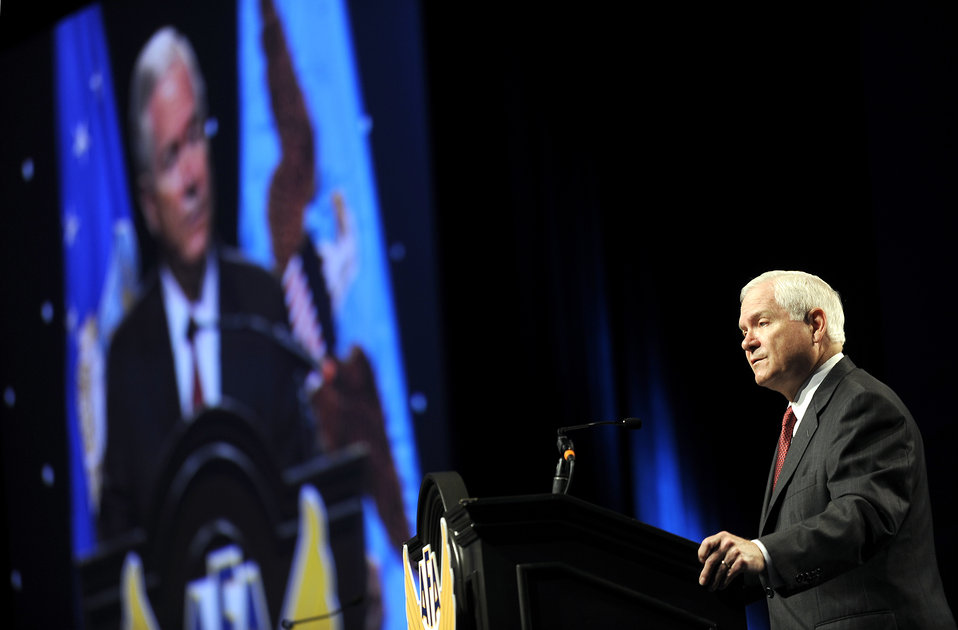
SecDEF announces return of KC-X program

Secretary of Defense Robert M. Gates addresses the audience at the Air Force Association's 2009 Air and Space Conference and Technology Exposition Sept. 16, 2009, in Washington, D.C. The three-day conference features more than 130 exhibitors and more than three dozen speakers and panelists discussing topics of key interest in today's Air Force and aerospace development.